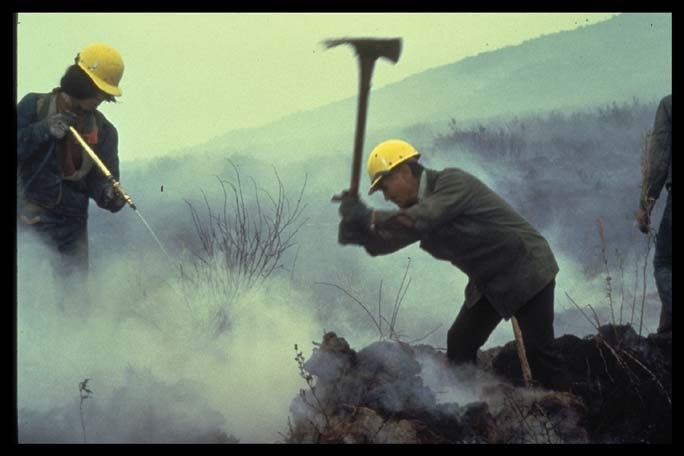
Wildland firefighter